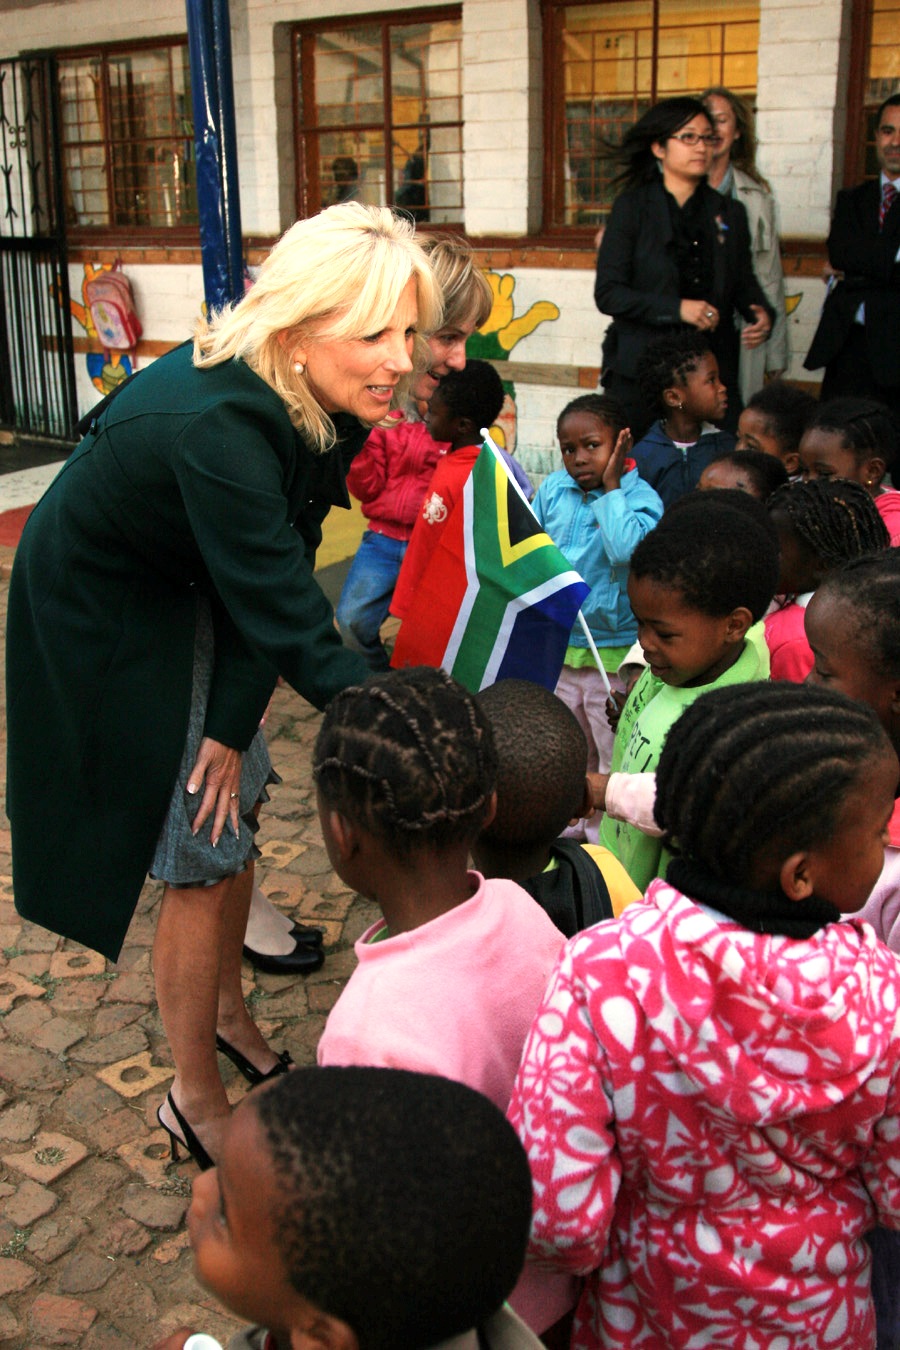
Dr. Jill Biden Shakes Hands With South African Children

Dr. Jill Biden, wife of Vice President Joseph Biden, shakes hands with South African children during her visit to the Mapetla Day Care Centre in Soweto, Johannesburg, South Africa, on June 10, 2010.